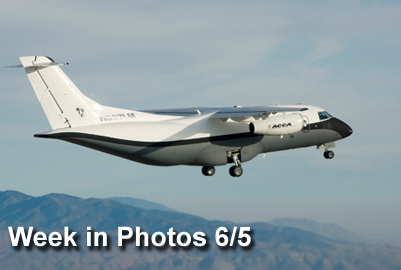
Week in Photos

Air Force Week in Photos for June 5 highlights photos from around the Air Force. In this photo, the Advanced Composite Cargo Aircraft makes its first test flight June 2 from Air Force Plant 42 in Palmdale, Calif.